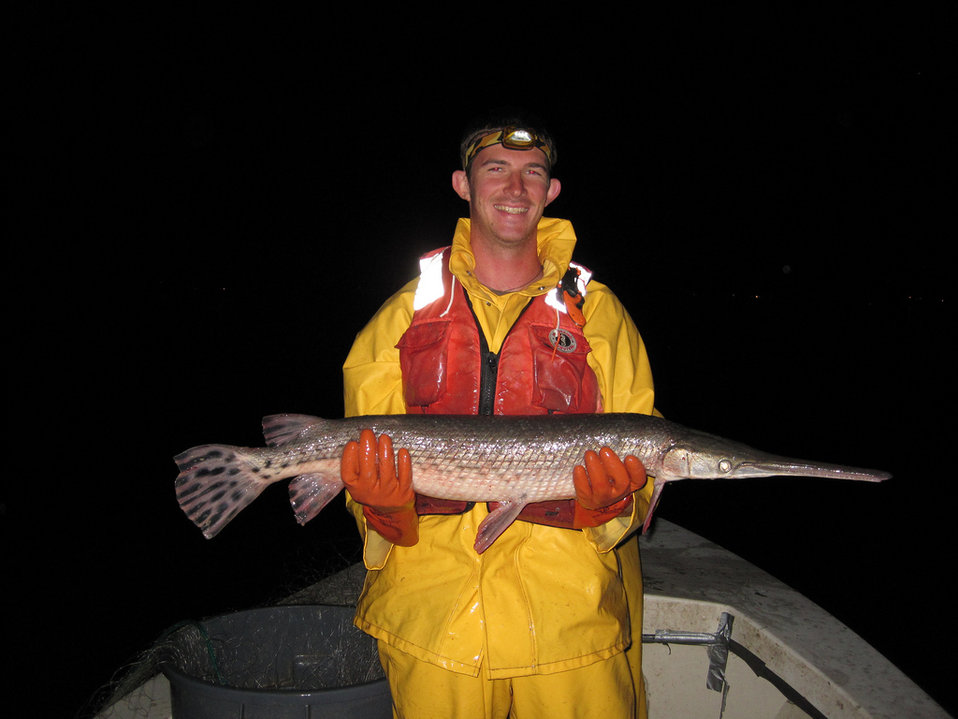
Longnose gar

U.S. Fish and Wildlife Service